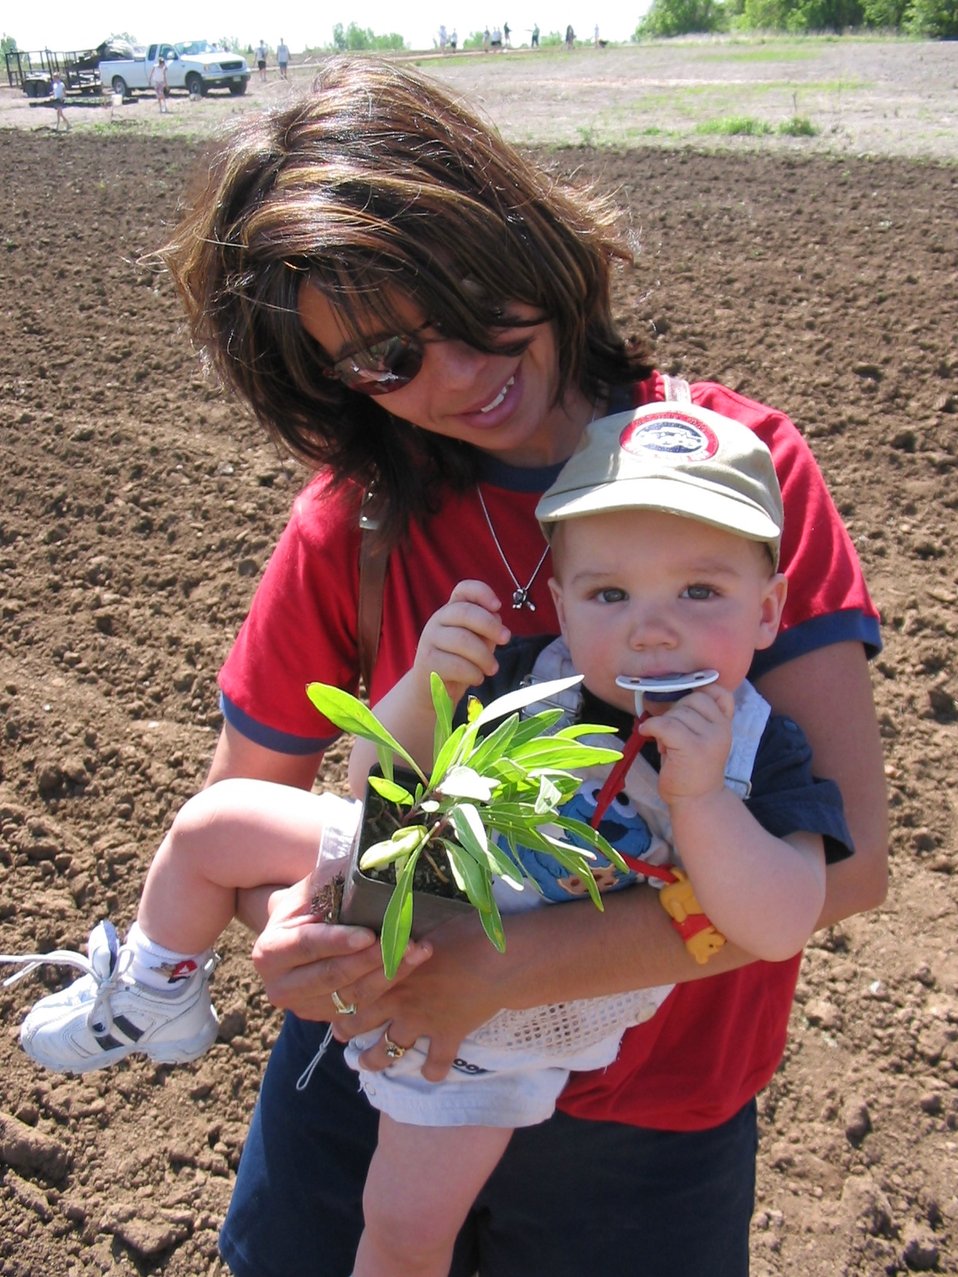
Community